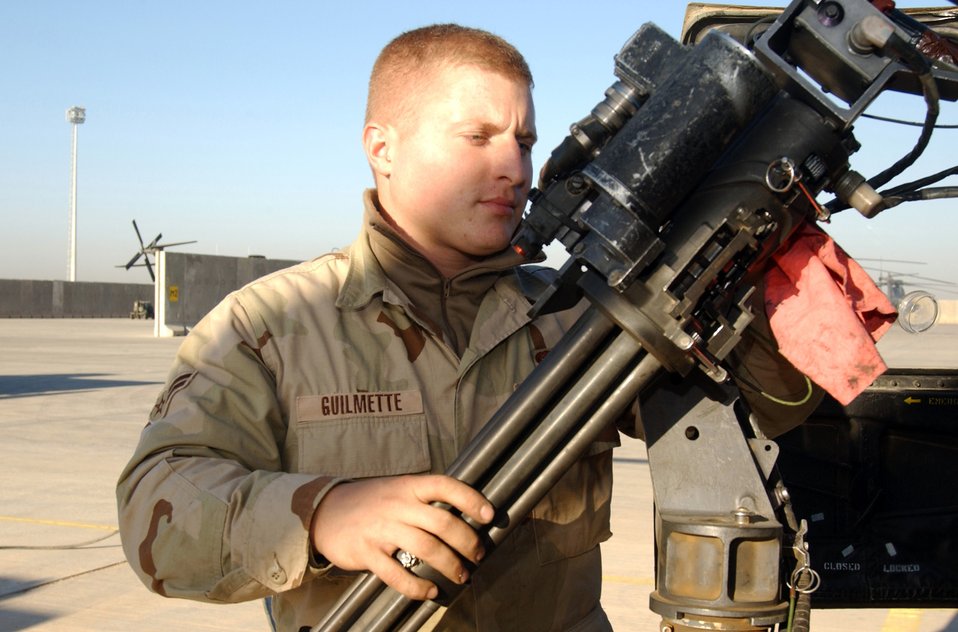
Keeping 'em ready

BALAD AIR BASE, Iraq (AFPN) -- Armament specialist Airman 1st Class Casey Guilmette cleans the mini gun on an HH-60G Pave Hawk helicopter. The Airman is one of more than 30 64th Expeditionary Helicopter Maintenance Squadron troops that keep helicopters here ready for their around-the-clock combat search and rescue missions, whether they are routine or a matter of life and death.